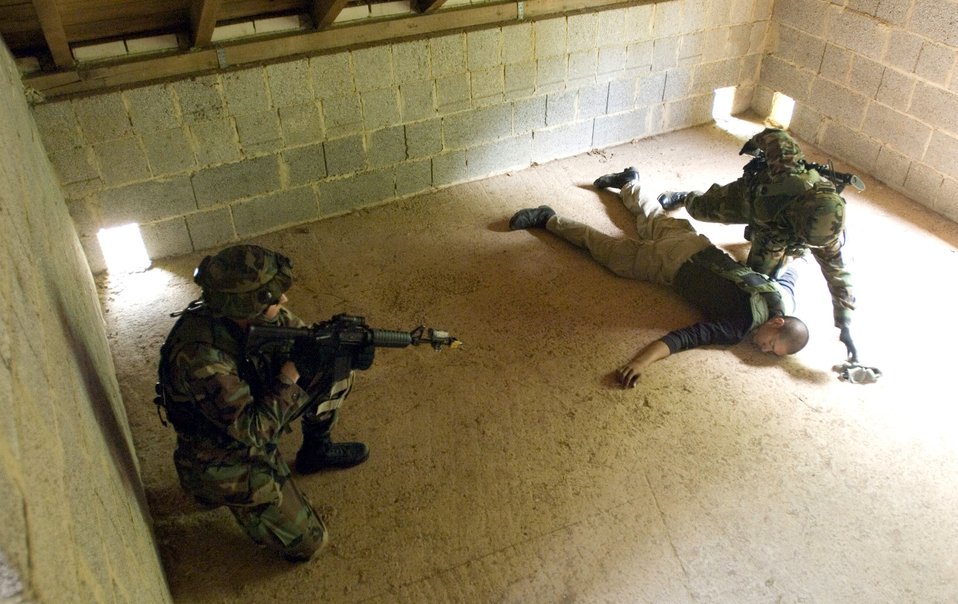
Urban terrain training

First Lt. Raymond Fortner provides cover as Airman 1st Class Nicholas Sisouphone checks